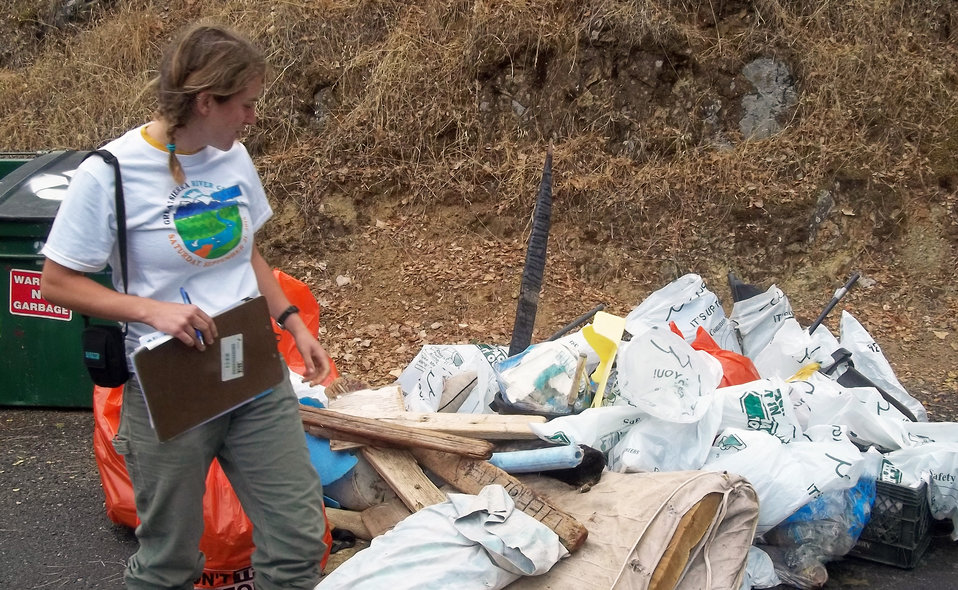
NPLD 2013 USACE Sacramento District

A volunteer with the South Yuba River Citizens League helps in the removal of 450 pounds of trash and 50 pounds of recyclables during the 16th annual Yuba River Cleanup event, Sept. 21, 2013, at Englebright Lake, the U.S. Army Corps of Engineers Sacramento District park near Smartsville, Calif.